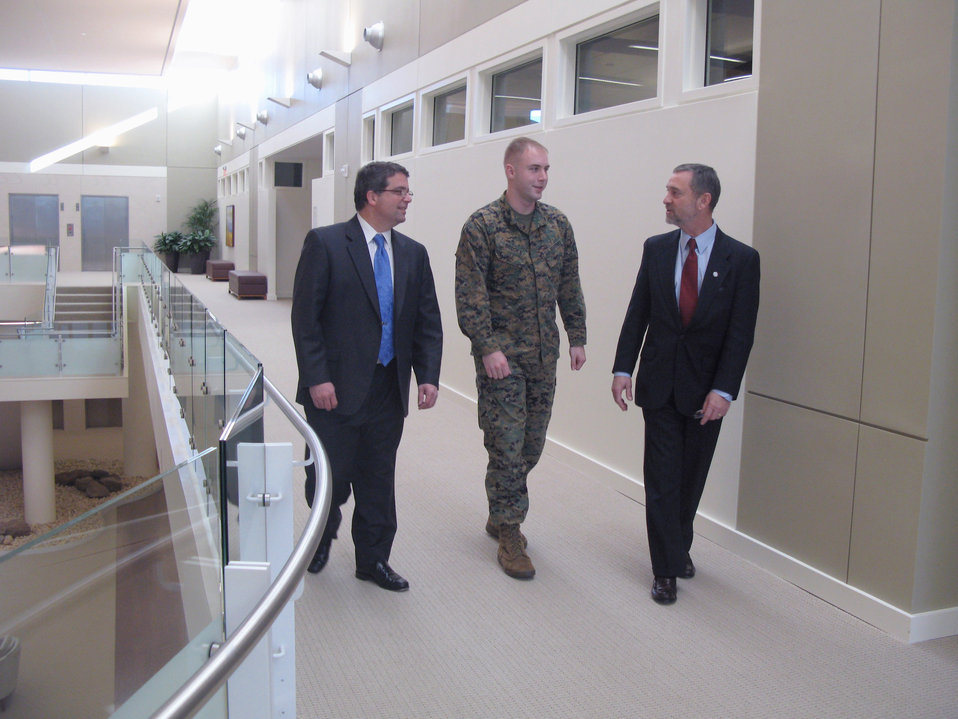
Interpid Center

Marine Corps Sgt. Tim Brooks talks with Dr. James Kelly, right, and Dr. Thomas J. DeGraba about the care Sergeant Brooks is receiving. Sergeant Brooks suffered a traumatic brain injury after being exposed to a rocket attack and three improvised-explosive-device attacks in Iraq. Dr. Kelly is the director of the National Intrepid Center of Excellence. Dr. DeGraba is the center's deputy director.